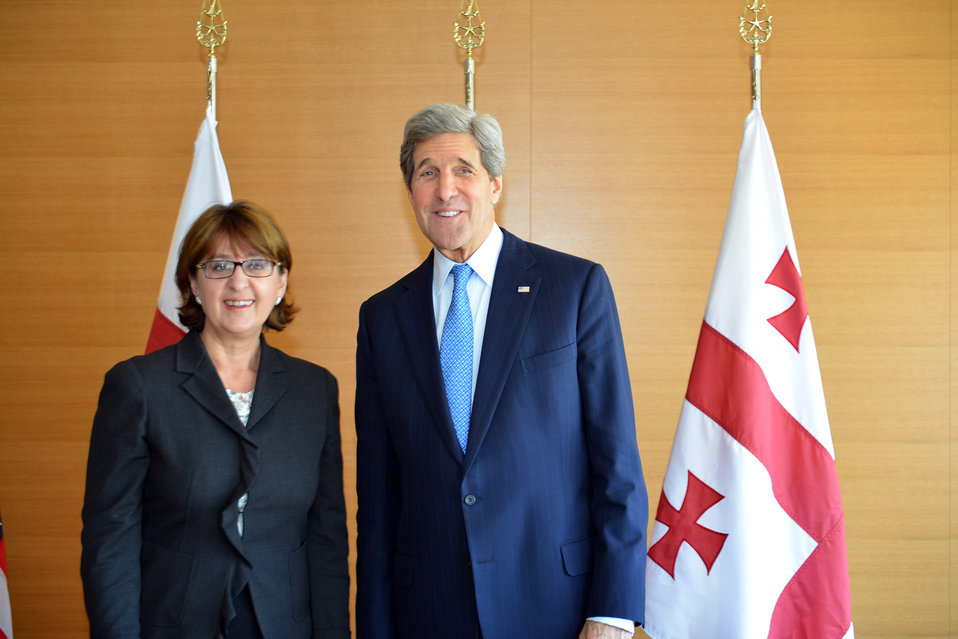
Secretary Kerry Meets With Georgian Foreign Minister Panjikidze

U.S. Secretary of State John Kerry meets with Georgian Foreign Minister Maia Panjikidze in Brussels, Belgium, on April 24, 2013.